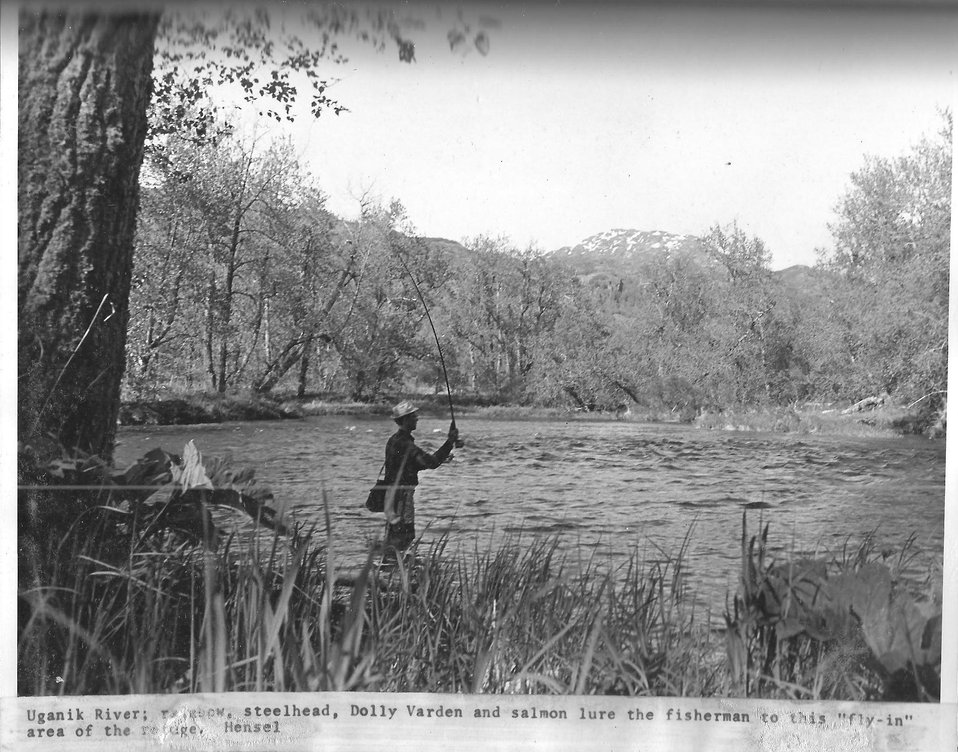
(1970) Fishing on Uganik River

Credit: USFWS

Source and Contact: Kodiak National Wildlife Refuge